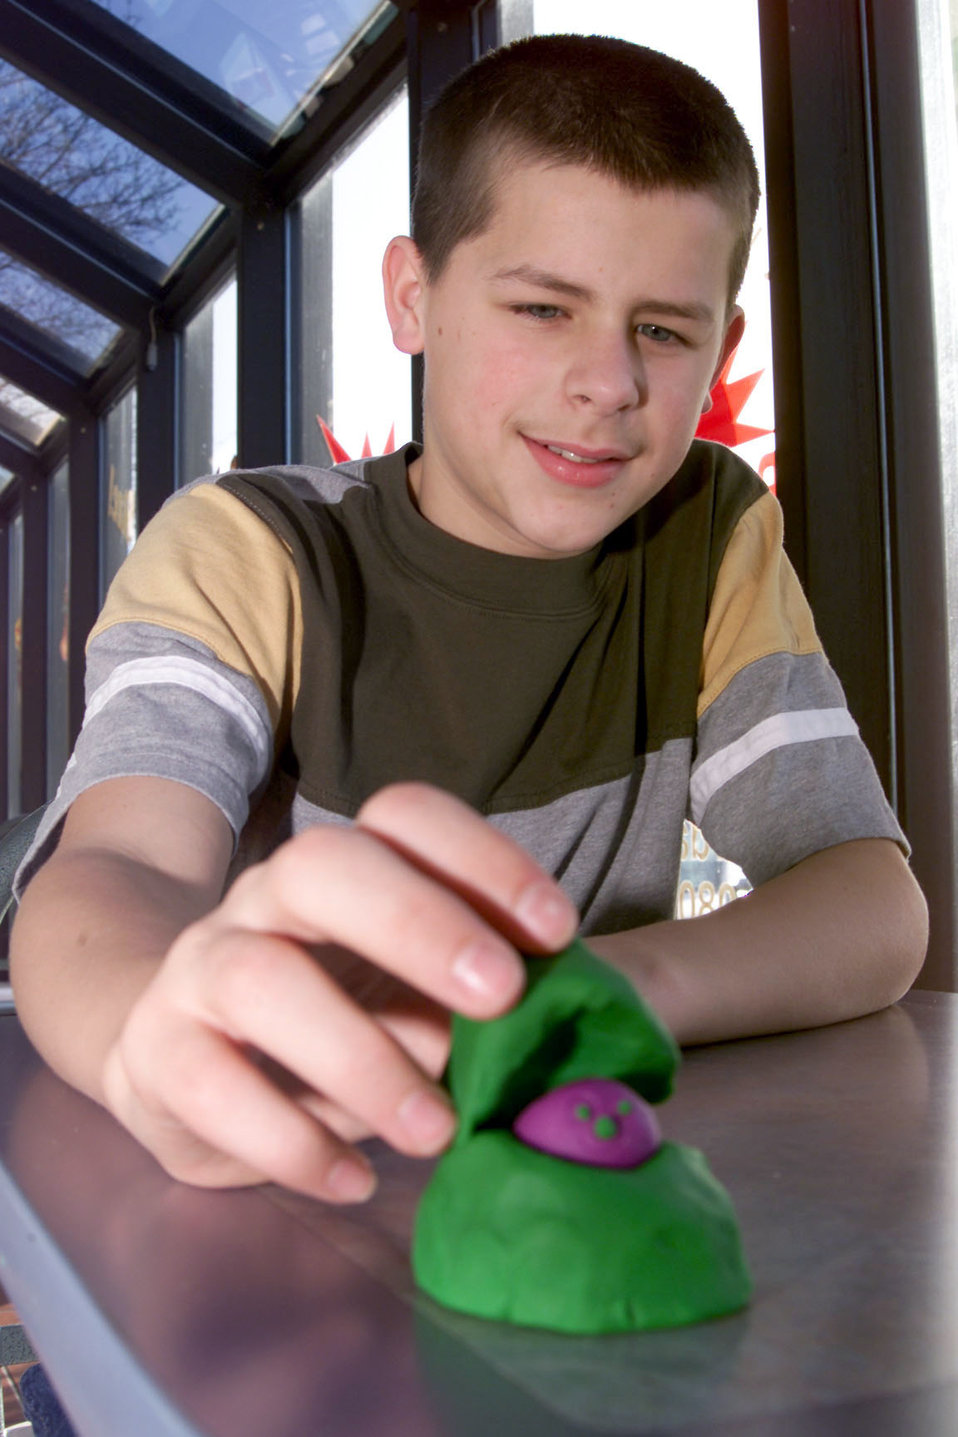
Making movies out of clay

SPANGDAHLEM AIR BASE, Germany -- Steven Watts, a 13-year-old Spangdahlem Middle School student here, displays his latest clay character, a recreation of an elf, similar to the one used in his film